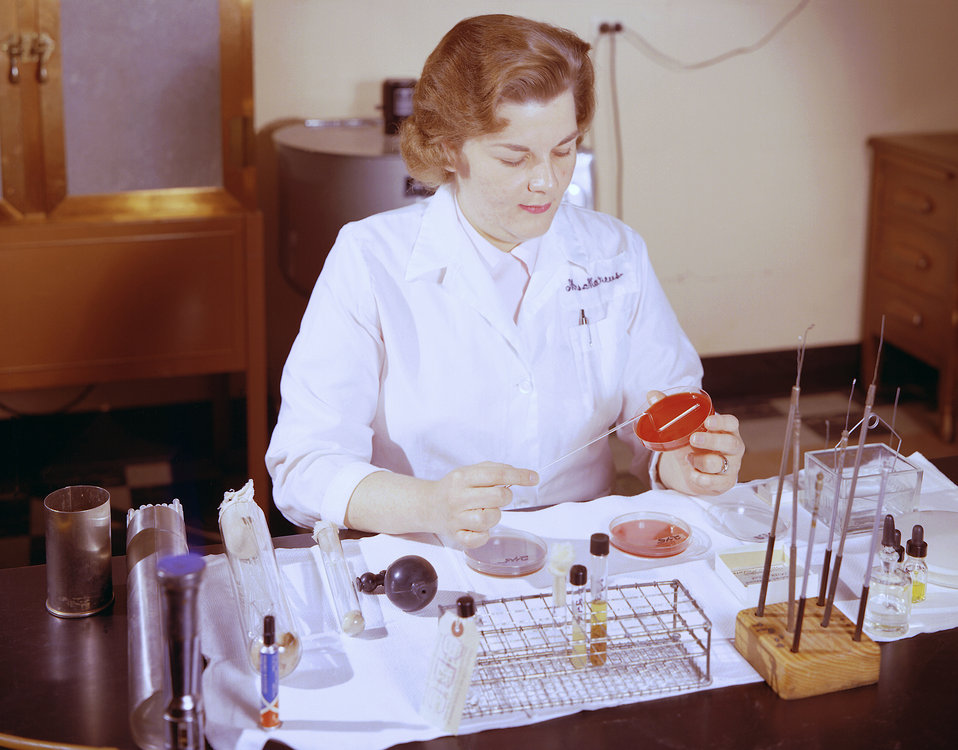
This historic 1963 photograph depicted laboratorian, Betsy Marcus, as she was processing cerebrospinal fluid specimens to be analyzed during subsequent bacterial meningitis studies.